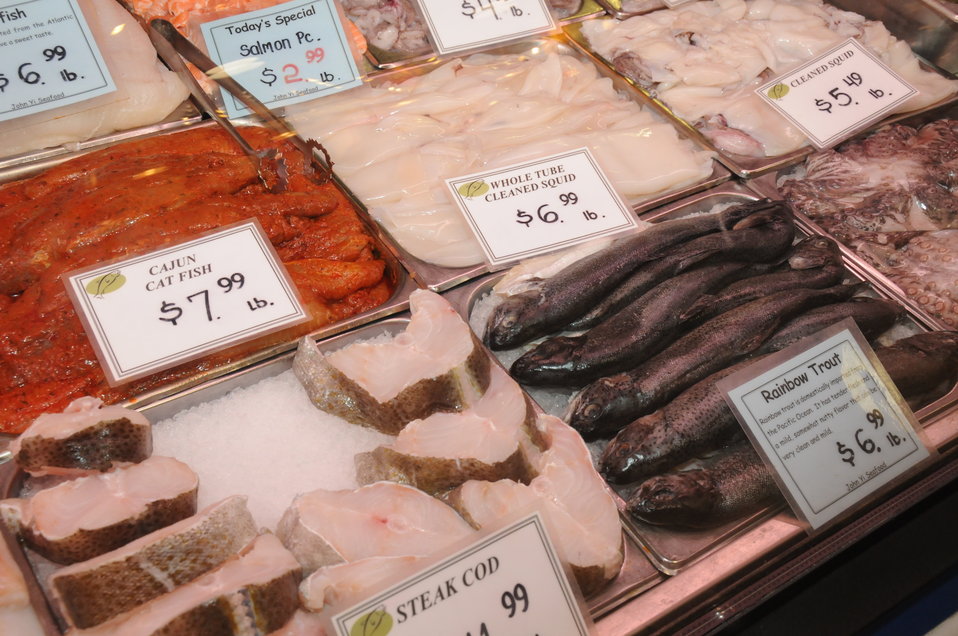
The Reading Terminal Market offers produce fresh from the field to the people of Philadelphia, PA on April 3, 2009. There are Amish specialties, fruits, vegetables, meats, seafood, and poultry. Reading Terminal Market opened for business in 1892 with approximately 78,000 square feet and almost 800 spaces for vendors. The Market was revitalized in the 1990’s and today is still the gastronomic bazaar that its original planners had envisioned. Many of the historic Market stands survived the reconstruction and are once again filled with local produce, fresh eggs, milk, meats, poultry, seafood, handmade crafts, jewelry, and clothing. The Market is home to more than 80 merchants, two of whom are descendants of the original stand holders from a century before.